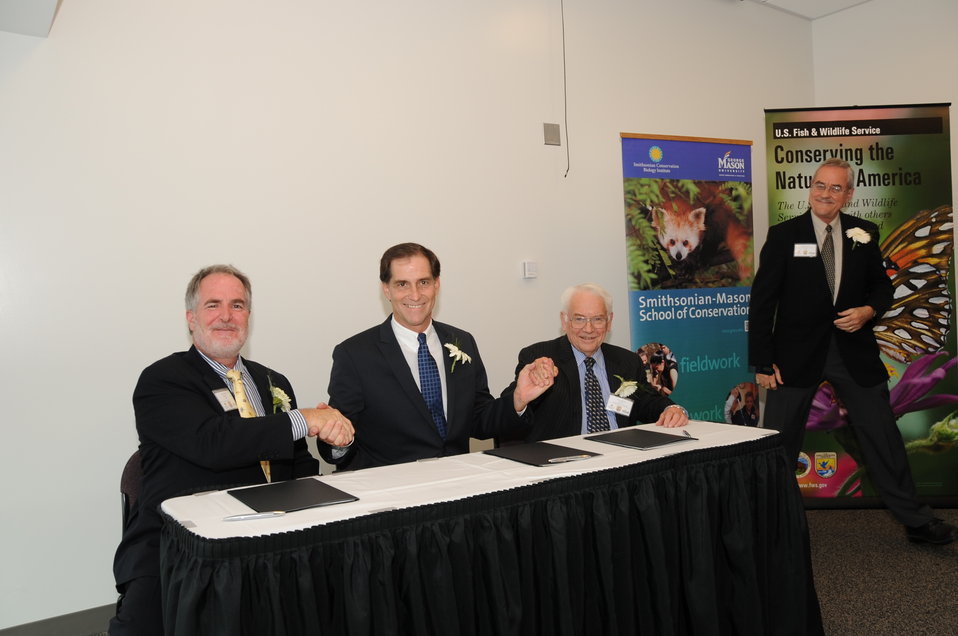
Together in Conservation

Memorandum of Understanding Signing Ceremony with U.S. Fish and Wildlife Service, Smithsonian Institution, and George Mason University. October 26, 2012